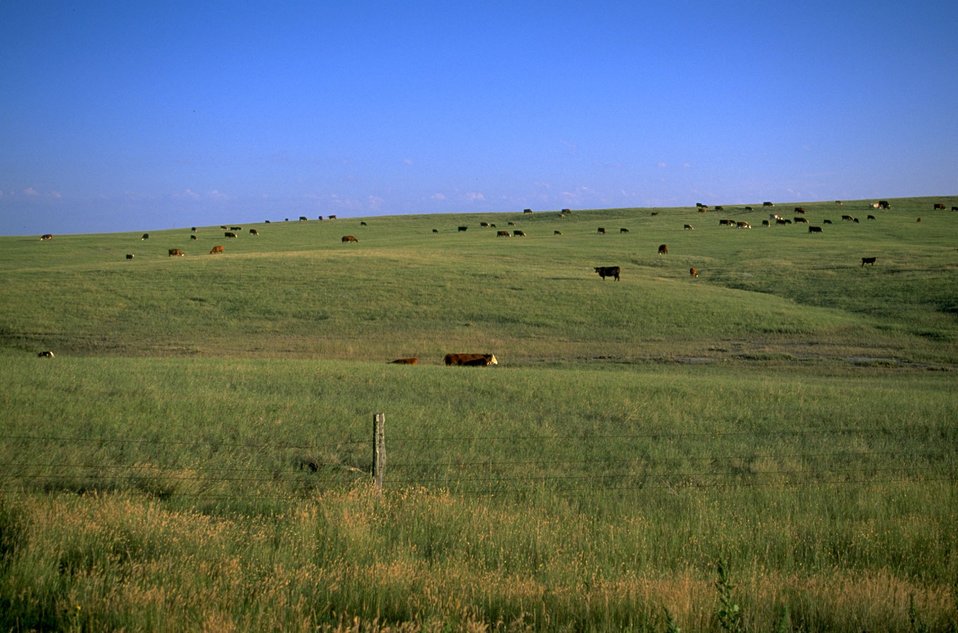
Cattle grazing